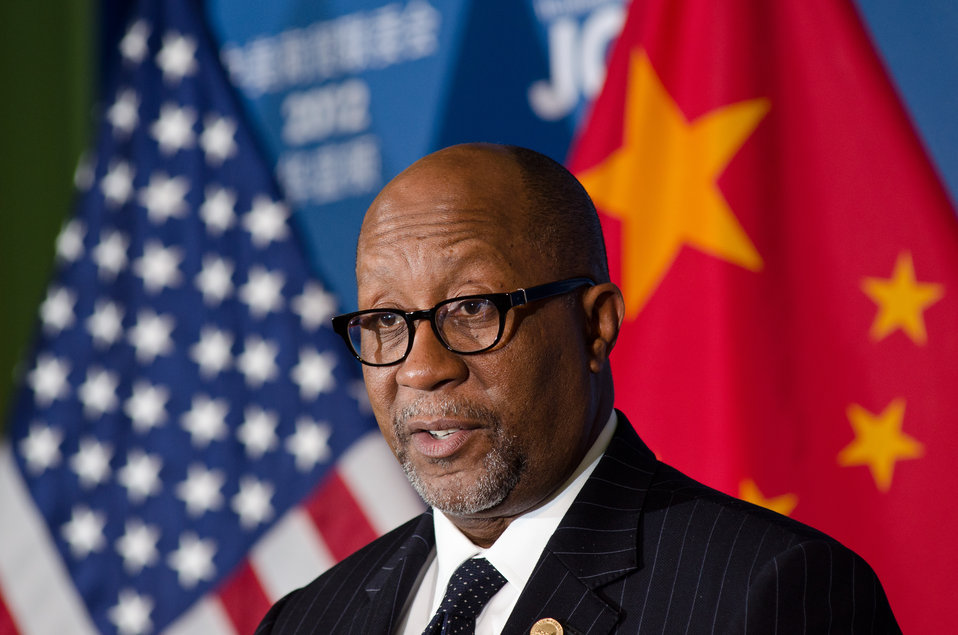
U.S. Trade Representative Ron Kirk responds to a question from an international news media journalist at the 23rd Session of the U.S. China Joint Commission on Commerce and Trade (JCCT) at the Andrew W. Mellon Auditorium in Washington, D.C. on Wednesday, Dec. 19, 2012. The JCCT holds high-level plenary meetings on an annual basis to review progress made by working groups that focus on a wide variety of trade issues. These working groups meet throughout the year to address topics such as intellectual property rights, agriculture, pharmaceuticals and medical devices, information technology, tourism, commercial law, environment, and statistics.